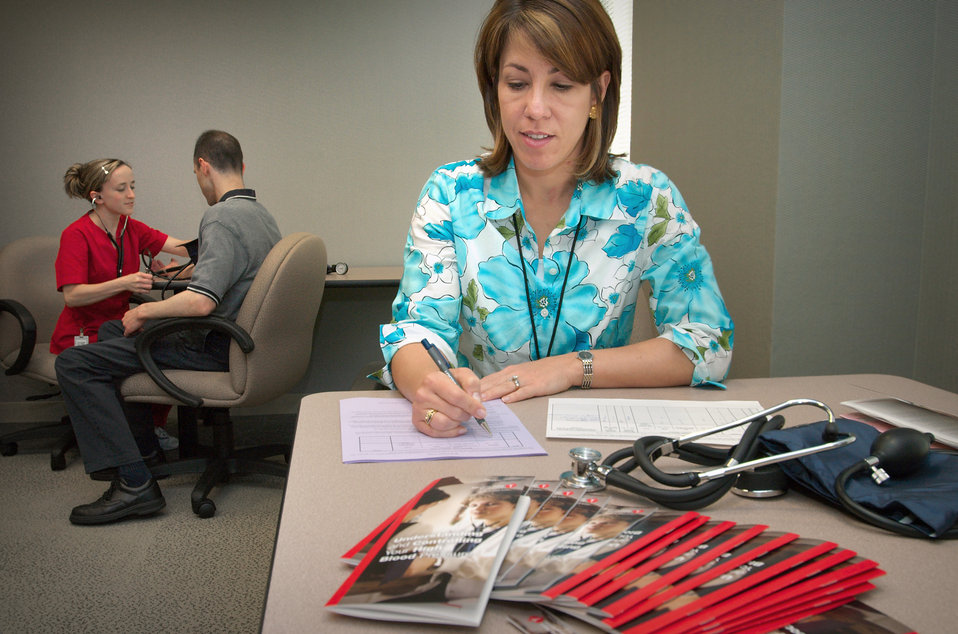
This image showed Robyn Morgan, of the National Center for Chronic Disease Prevention and Health Promotion (NCCDPHP) ), as she was going over patient records during a free blood pressure screening event that was held on all CDC campuses in 2005.High blood pressure (HBP), or hypertension, is known as a 'silent killer' for people who have HBP often do not experience symptoms, but are at greater risk for heart disease and stroke, which are leading causes of death in both women and men. The CDC campuses included in the screening event were Century Center, Chamblee, Corporate Square, Executive Park, Koger, and Roybal, and was provided by the Office of Women's Health (OWH), Office of Health and Safety (OHS), NCCDPHP's Cardiovascular Health Branch (CVH), as well as volunteers from various other centers, institutes, and offices (CIOs). This annual event was held in observance of National High Blood Pressure Education Month, National Nurses Week, and National Women's Health Week.